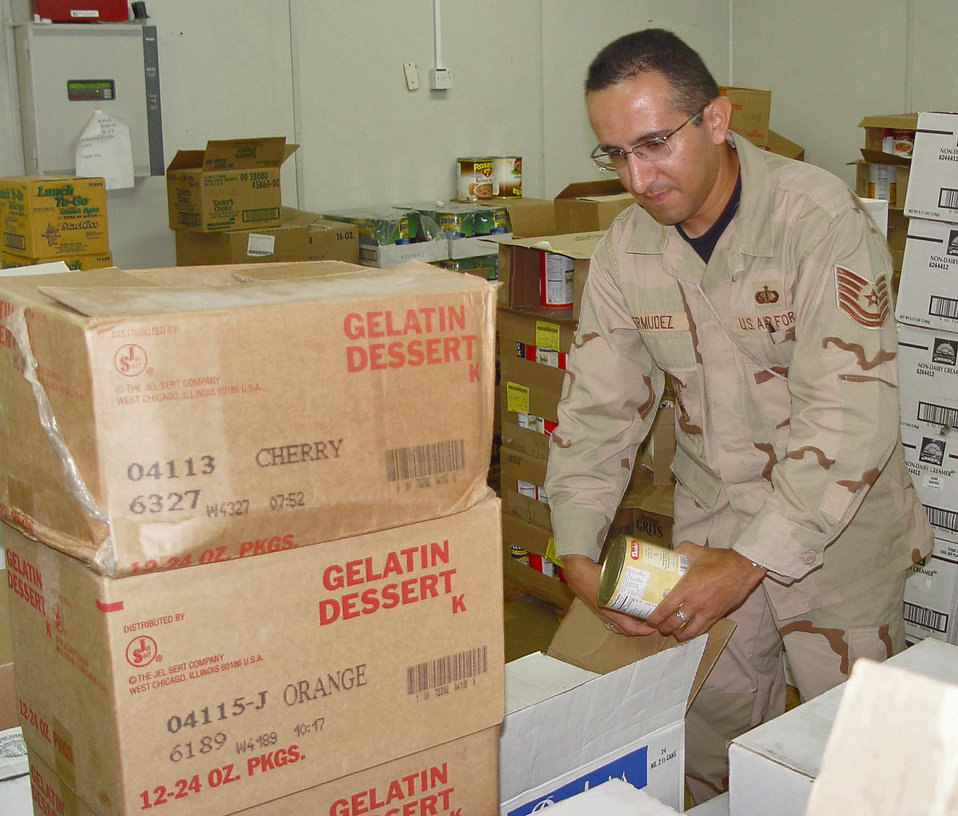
Deployed Services

SOUTHWEST ASIA -- Tech. Sgt. Jeimmy Bermudez unpacks food boxes in a store room here. Sergeant Bermudez orders food shipments, unloads and stocks supplies. He is assigned to the 380th Expeditionary Services Squadron.